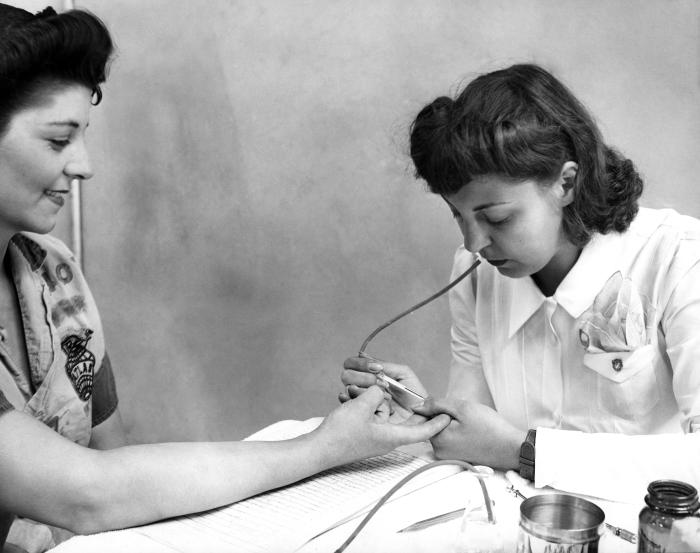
This historical 1943 image was provided by the Center for Disease Control's (CDC), National Institute for Occupational Safety and Health (NIOSH). Depicted, was one of two inhouse nurses examining fellow coworkers at an Ohio TNT (trinitrotoluene) military ordnance manufacturing facility, for symptoms of TNT poisoning (See PHIL 9788 and 9789). This nurse was in the process of performing a finger stick, in order to extracting a blood sample that would later be analyzed for the presence of metabolites indicative of TNT poisoning. A poisonous chemical, TNT will irritate the skin upon contact, and actually will change the skin's color to a bright yellow-orange. Prolonged exposure leads to liver damage, anemia, enlargement of the spleen, and a compromised immune system, to name a few of its negative effects. Trinitrotoluene is also a known carcinogen.